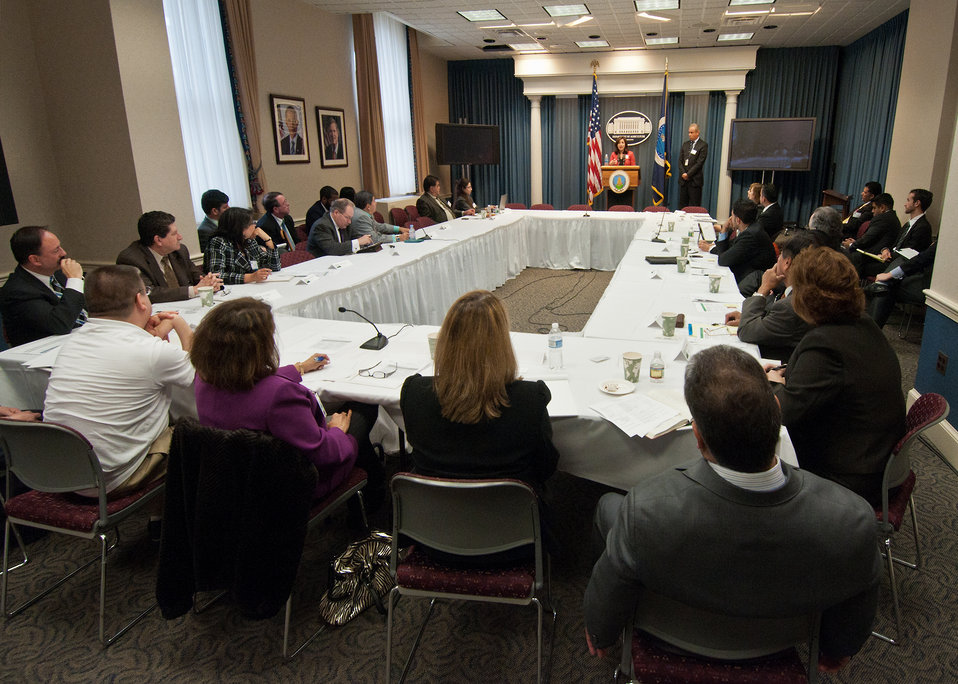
Veronica Villalobos, Director, Office of Diversity and Inclusion, Office of Personnel Management
explained OPM policy at the United States Department of Agriculture Hispanic Roundtable at the United States Department of Agriculture, Monday, December 5, 2011 in Washington, DC. The roundtable focused on recruitment, retention and employee development for the purpose of developing the USDA Hispanic recruitment Plan. The roundtable hosted several national Hispanic partners and recognized USDA Hispanic organizations and associations.